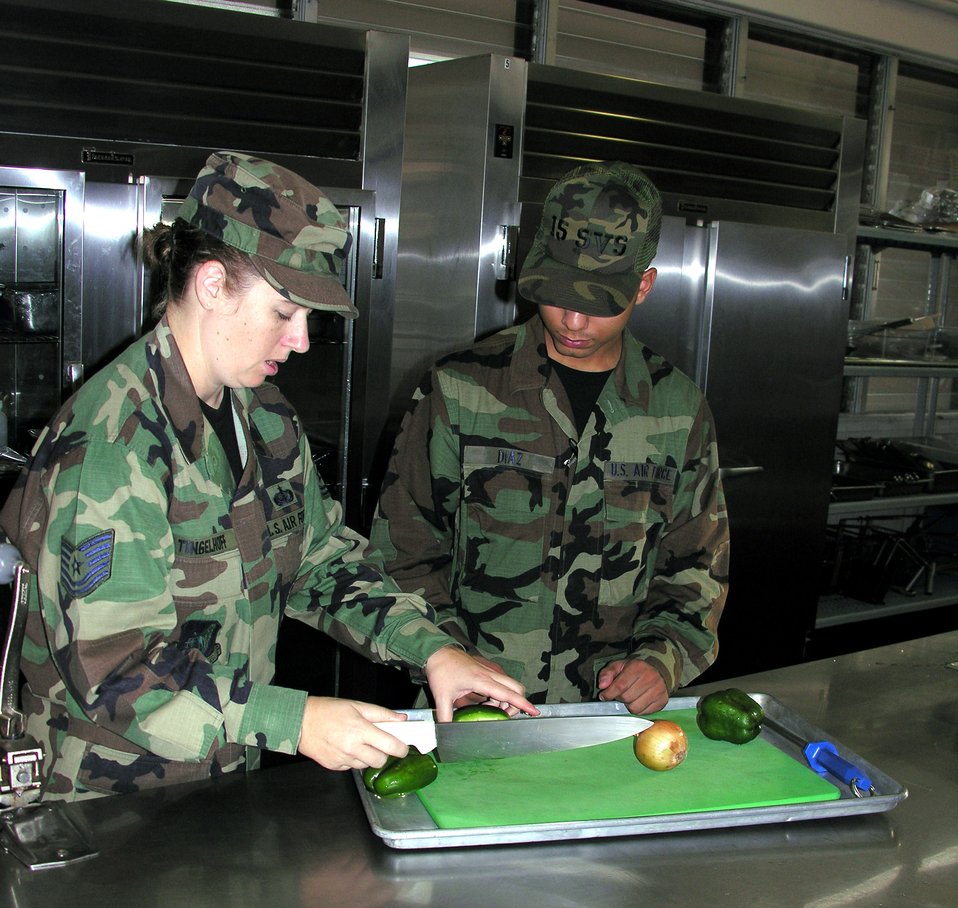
Serving through the season: Airman Basic Alex Diaz

Tech. Sgt. Regan Tingelhoff shows Airman Basic Alex Diaz how to chop vegetables for the lunch meal. Airman Diaz will work this Christmas at the Hale' Aina Dining Facility at Hickam Air Force Base, Hawaii.